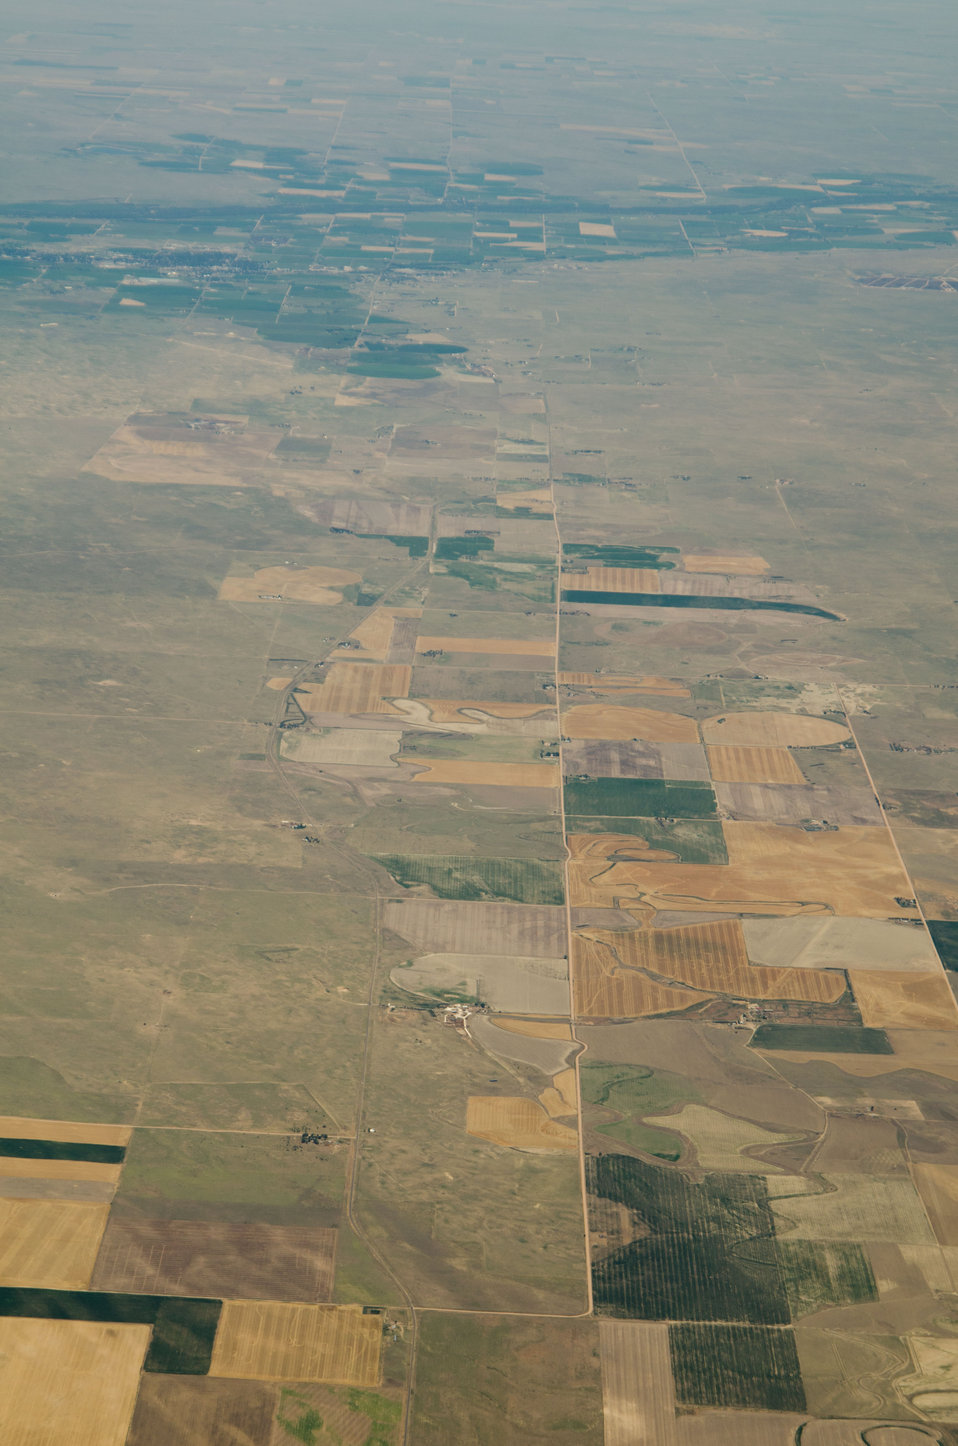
Aerial views of drought affected Colorado farm lands, 16 miles SE of Ft. Morgan, Colorado on Saturday, July 21, 2012. Green areas are irrigated, the yellow areas are dryland wheat crops.